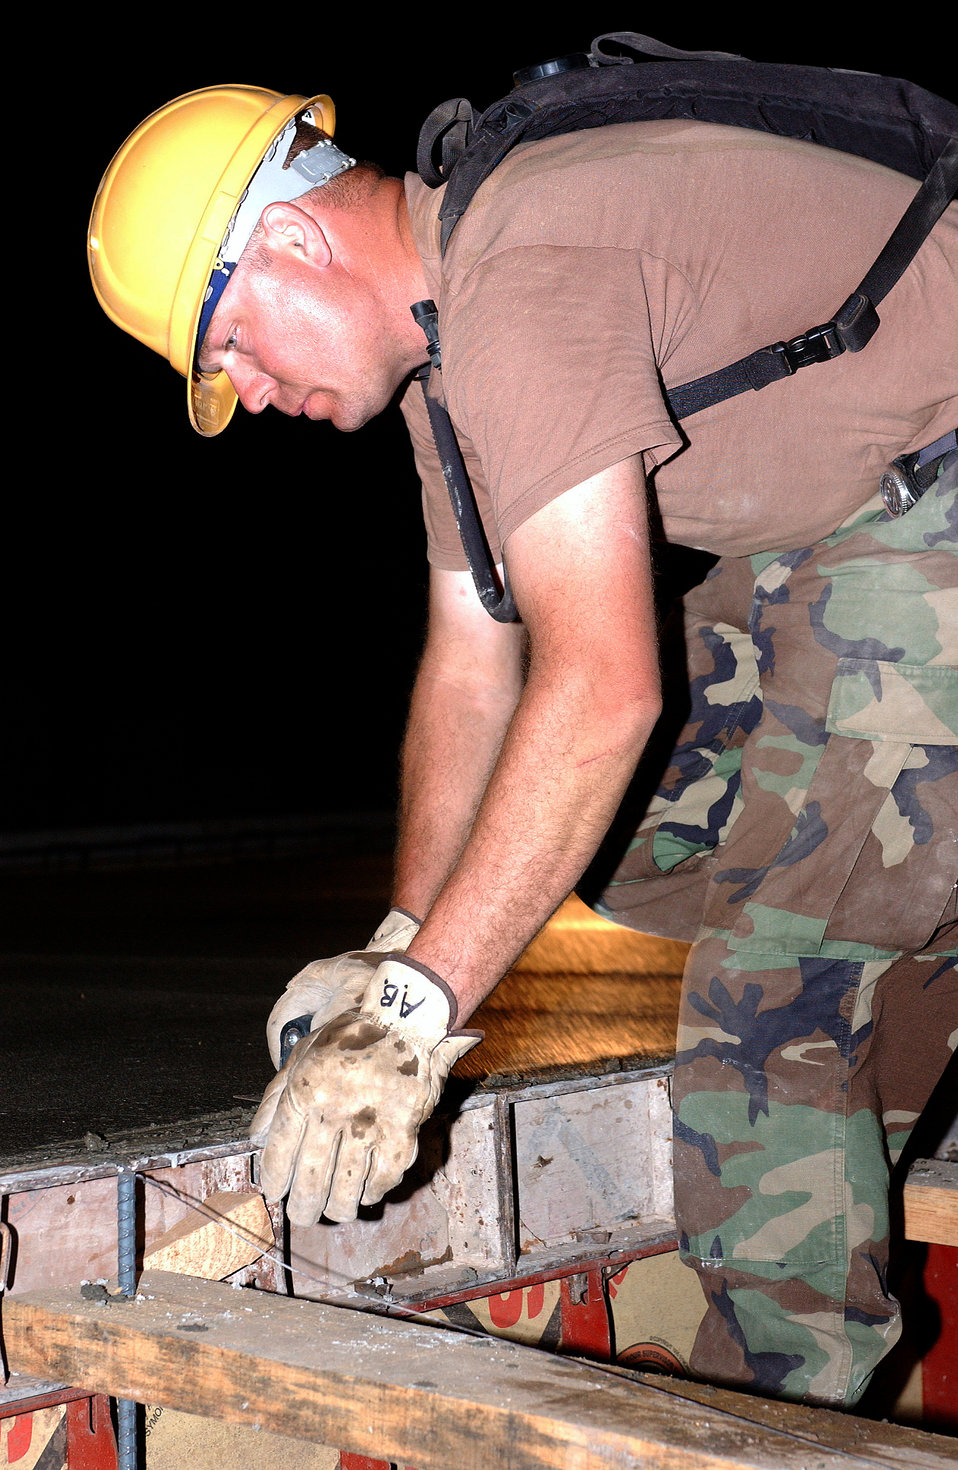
Airmen venture to New Horizons

LAS FLORES, El Salvador -- Staff Sgt. Alan Baker smooths over the edge of a concrete foundation for a school here. Reserve Airmen from Wright-Patterson Air Force Base, Ohio, are here supporting New Horizons 2005, a readiness training exercise providing humanitarian-assistance projects to help citizens of El Salvador. The exercise hones the Airmen's skills as they build schools, clinics and other projects. Sergeant Baker is assigned to the 445th Civil Engineer Squadron.